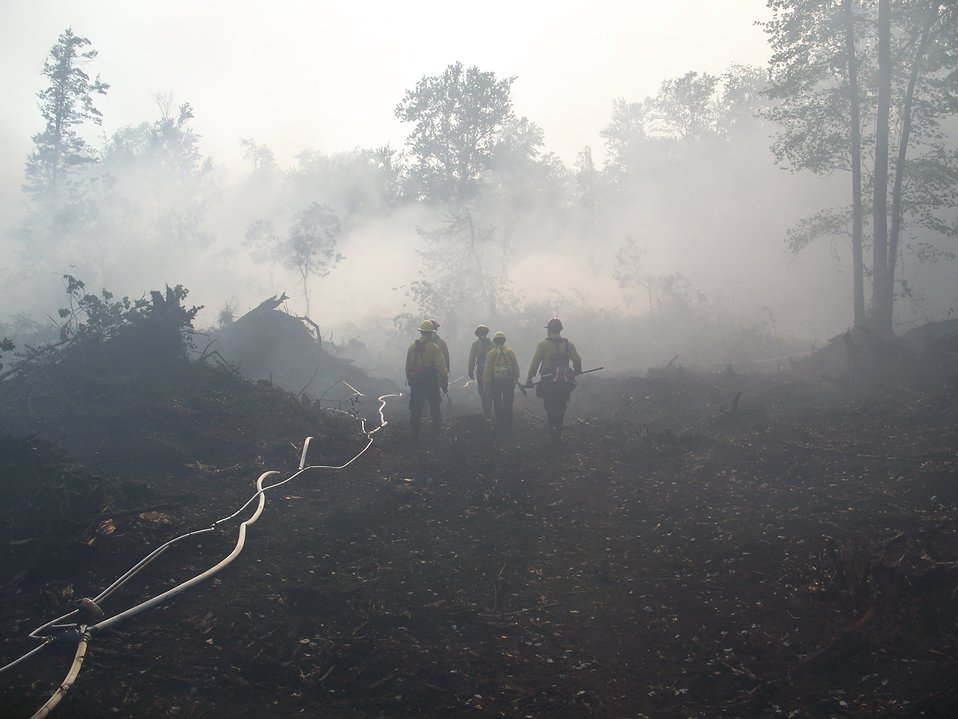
Bull North Spot

Suffolk, VA, August 2011: Hoses reflect light as firefighters patrol the line around the Bull North spot fire at the Lateral West Fire. The 43-acre Bull North Fire was among about 200 acres of the fire that burned on Dismal Swamp State Park. The remaining 6,000 acres burned on Great Dismal Swamp National Wildlife Refuge.Credit: Greg Sanders/USFWS